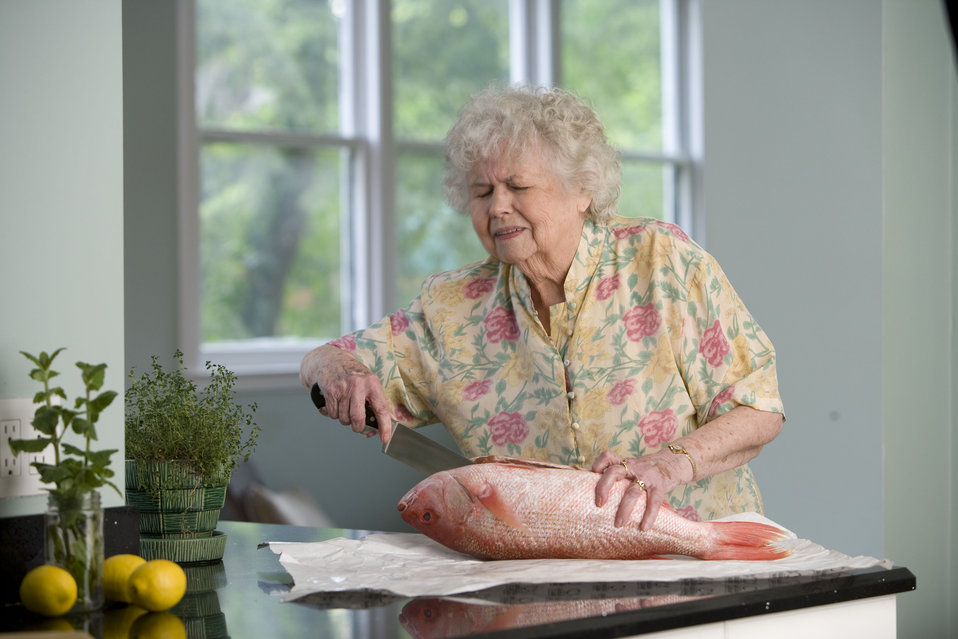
Here, an elderly woman was in the process of preparing a fresh fish on her clean kitchen counter. Carefully using a large knife, the woman had cut into the fish's belly, and would subsequently extract the internal organs prior to finally cutting away the fillets.